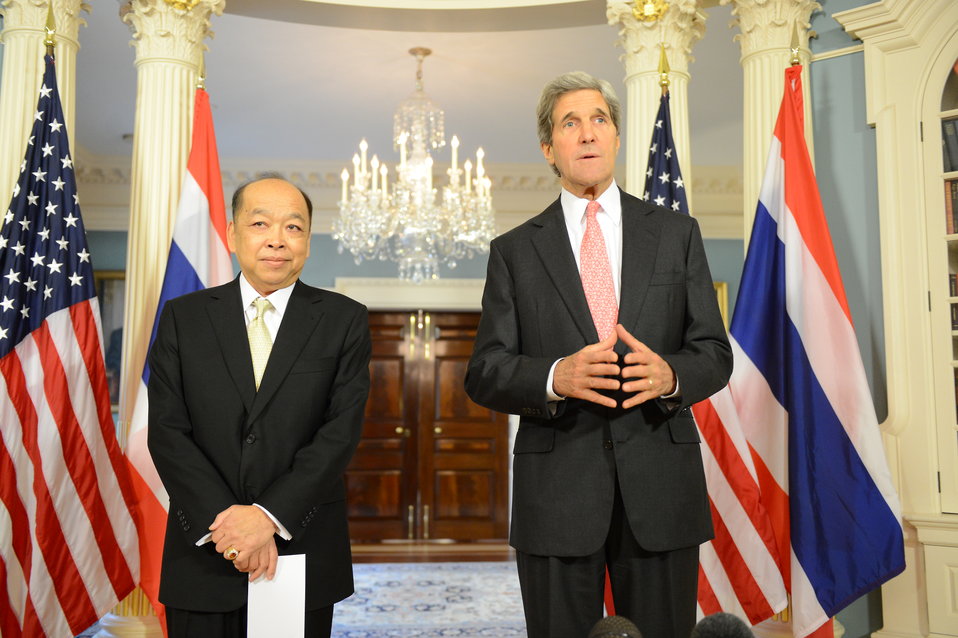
Secretary Kerry and Thai Foreign Minister Tovichakchaikul Address Reporters

U.S. Secretary of State John Kerry and Thai Foreign Affairs Minister Dr. Surapong Tovichakchaikul address reporters before their bilateral meeting at the U.S. Department of State in Washington, D.C., on May 6, 2013.